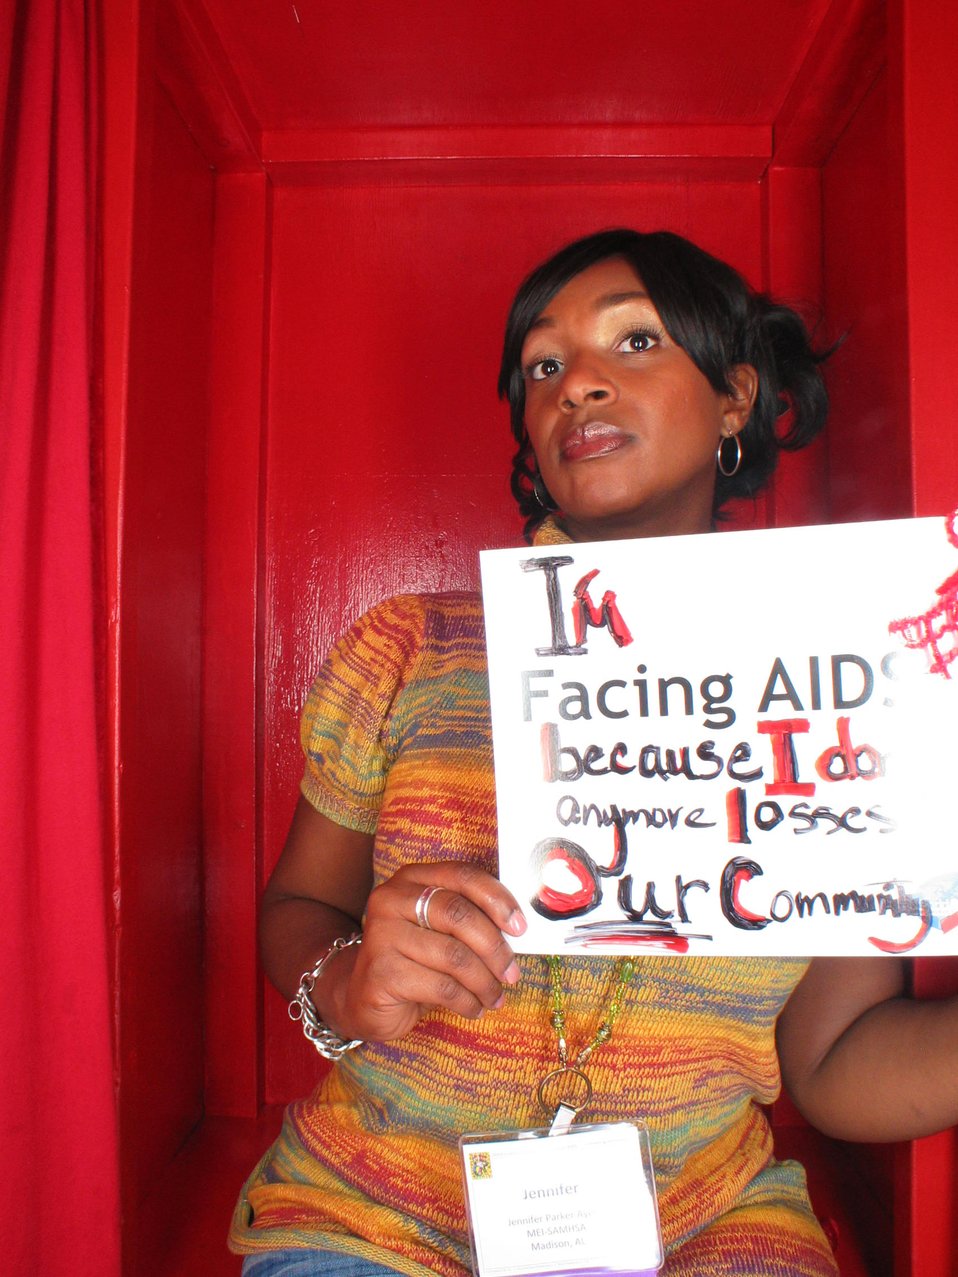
I'm Facing AIDS because I don't want anymore losses in our community.